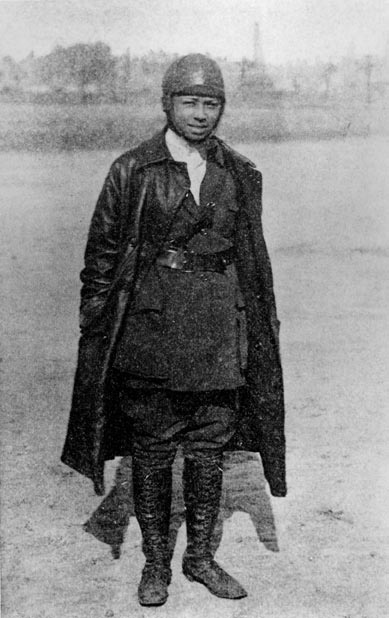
Bessie Coleman begins series highlighting African-Americans who made impact on aviation

Bessie Coleman: Performing in airshows and aerial events across the nation, sparked interest in flying for others to follow.